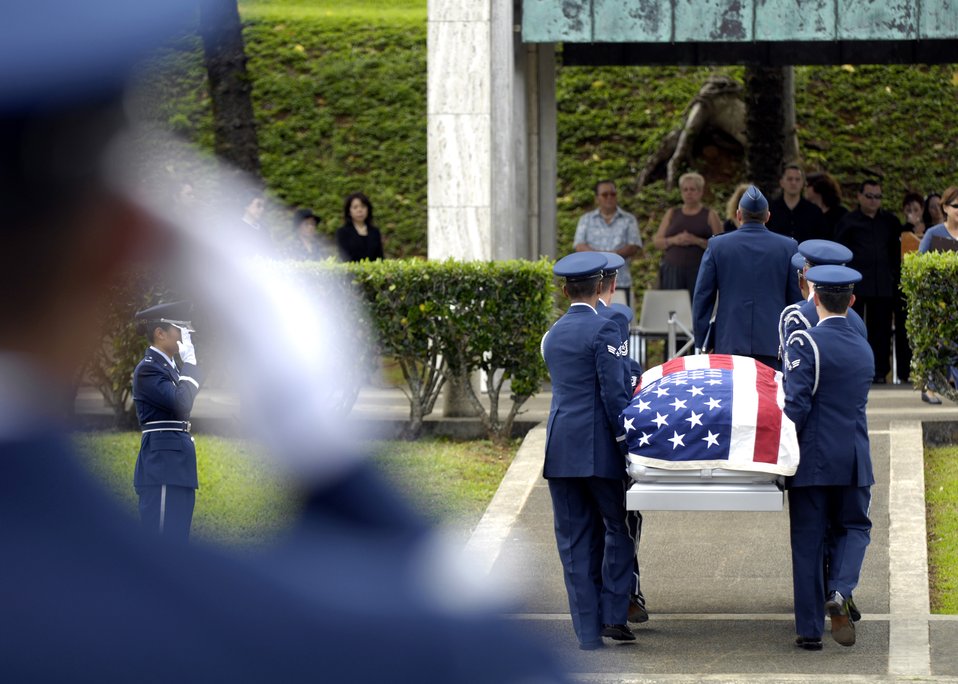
Rendering military honors for a veteran

Members of the 15th Airlift Wing Honor Guard at Hickam Air Force Base, Hawaii, salute while others perform pallbearer duties Oct. 26 during a veteran's funeral at Hawaii Veterans Cemetery. The base honor guard is rendering military honors to the veteran and his family.